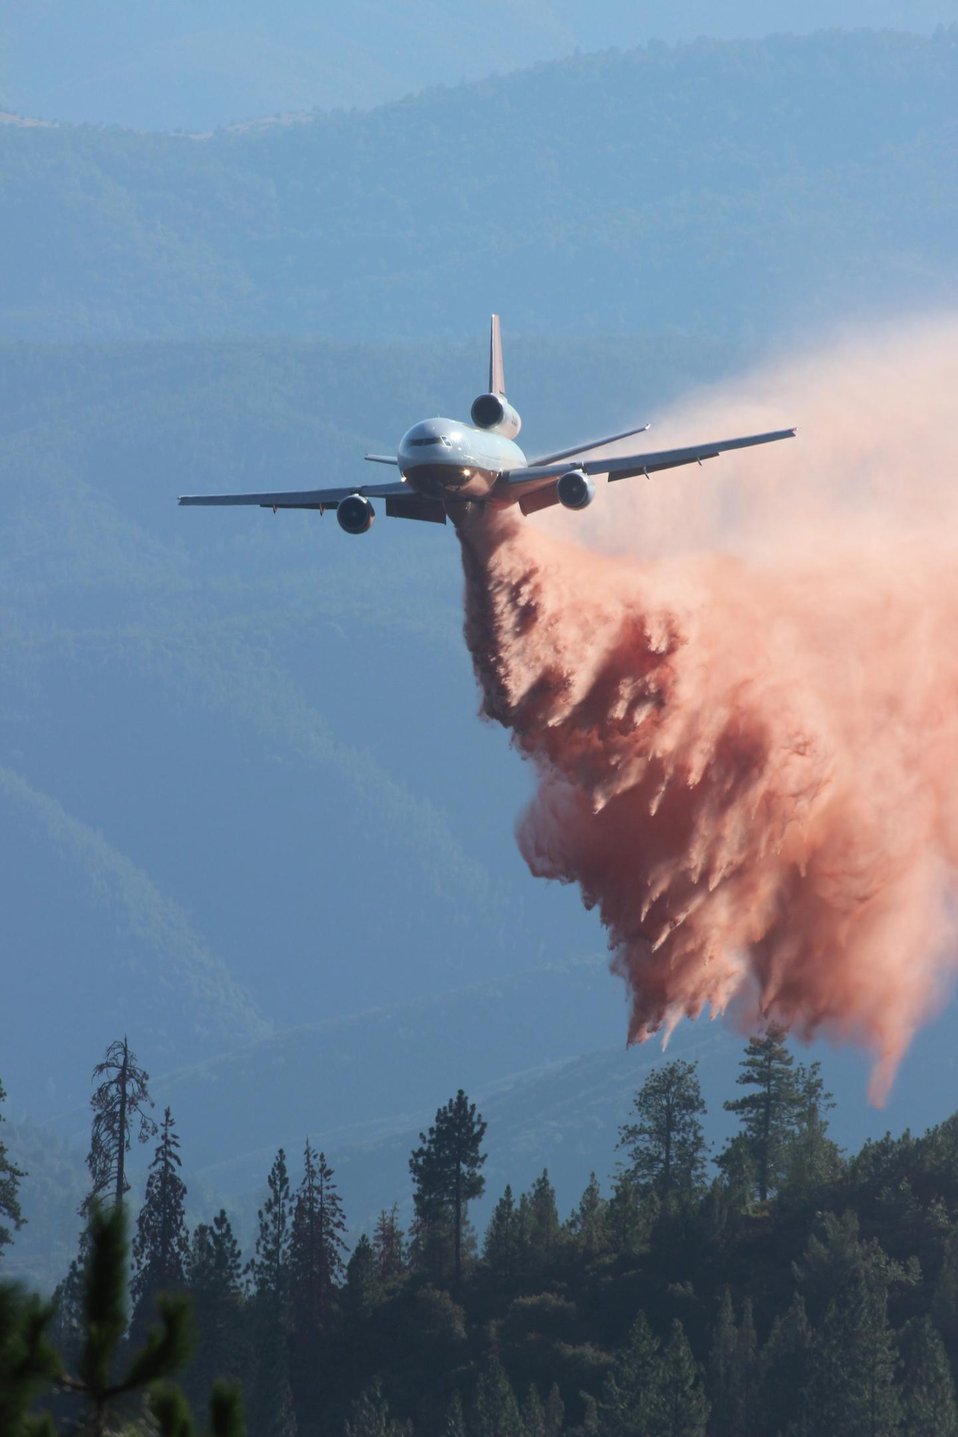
A DC-10 air tanker drops chemical fire retardant below Pilot Peak at the Rim Fire. The Rim Fire in the Stanislaus National Forest near in California began on Aug. 17, 2013 and is under investigation. The fire has consumed approximately 199,237 acres and is 32% contained.